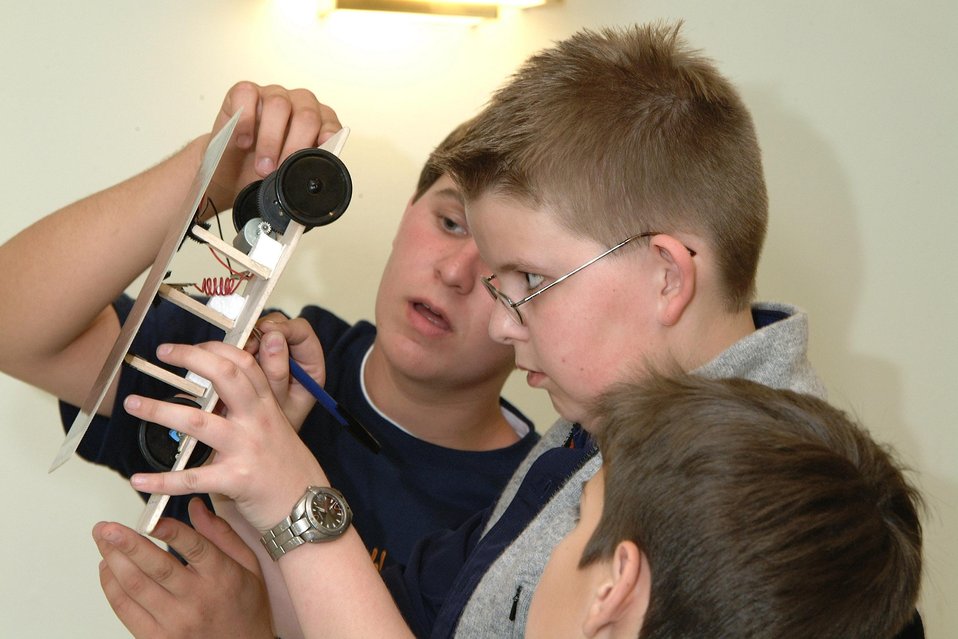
TEAM FROM LAKE HIGHLAND PREP. SCHOOL, ORLANDO, FL, BUILDING THEIR MODEL SOLAR CAR.

THE DEPARTMENT OF ENERGY SPONSORED THE FIRST NATIONAL MIDDLE SCHOOL SCIENCE BOWL ON MARCH 21-24, 2002 IN WASHINGTON, DC AT DOE HEADQUARTERS FORRESTAL BUILDING. ON MARCH 23RD THE COMPETITION INCLUDED A MODEL SOLAR CAR RACE HELD AT THE NATIONAL 4-H CONFERENCE CENTER, CHEVY CHASE, MD. THE MODEL CARS WERE DESIGNED AND CONSTRUCTED BY THE TEAM MEMBERS.